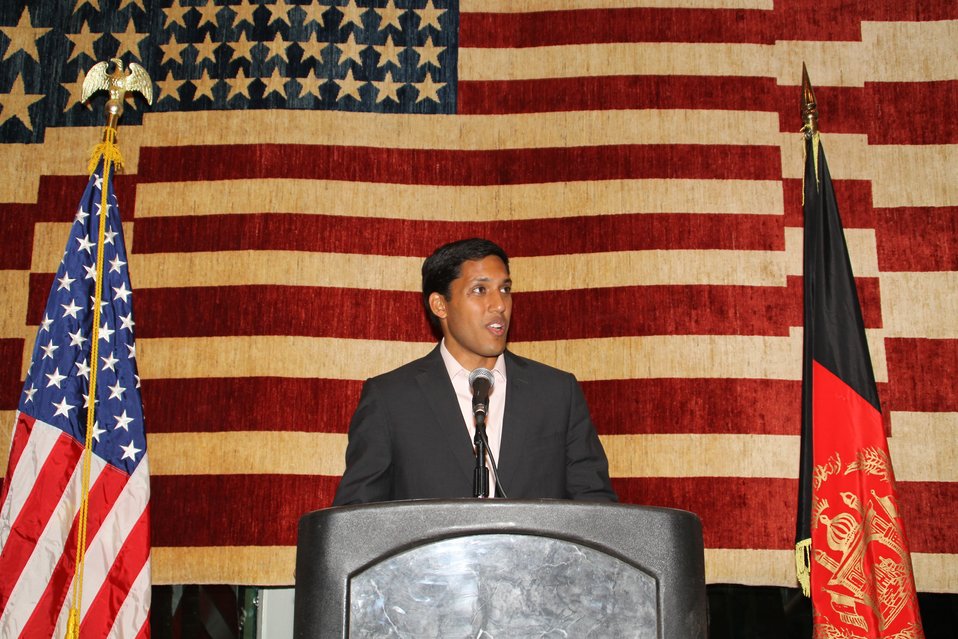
US Embassy Town Hall July 21, 2010